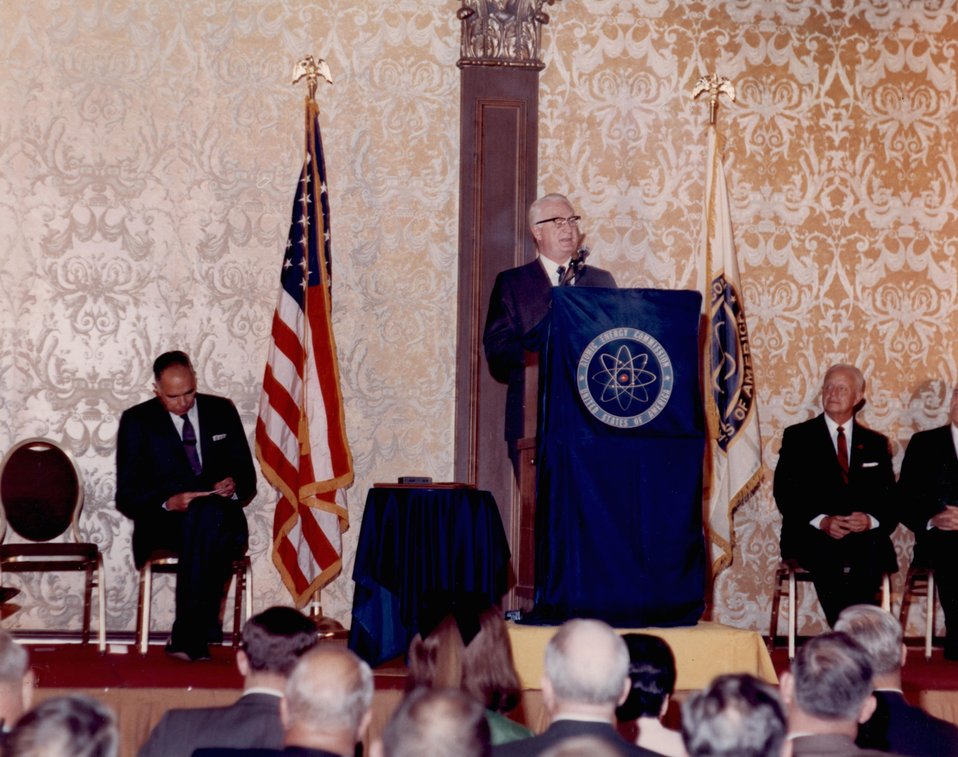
Enrico Fermi Award Ceremony. Imperial Ballroom. San Fransisco Hilton Hotel. 5:30 p.m., December 2, 1969. Fermi Award. Recipient: Walter Zinn. Date: Dec. 2, 1970.